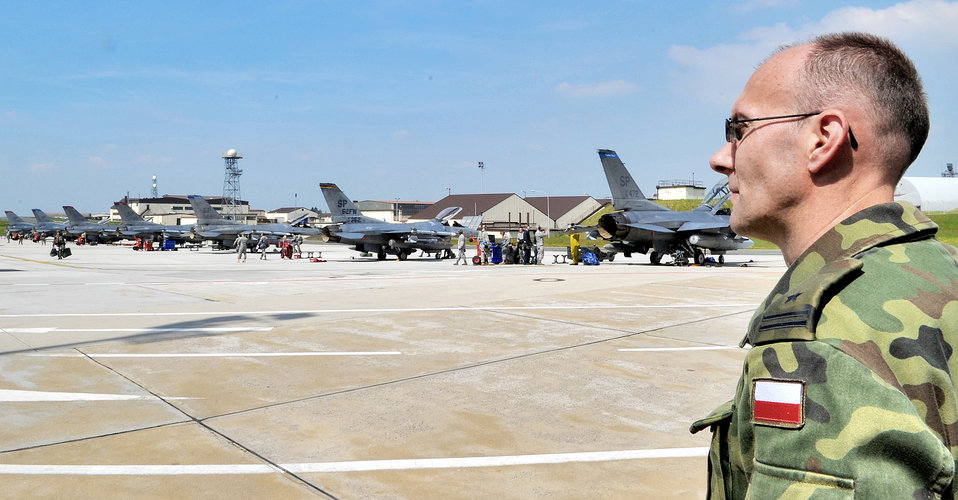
Polish team observes inspection

Polish air force Maj. Andriej Pokladek observes Airmen from the 52nd Aircraft Maintenance Squadron perform maintenance on F-16 Fighting Falcons during a U.S. Air Forces in Europe Operational Readiness Inspection June 23, 2010 at Spangdahlem Air Base, Germany. Members from headquarters USAFE and Aviano Air Base, Italy, 31st Fighter Wing escorted their Polish counterparts during the USAFE ORI. The Polish air force's 32nd Tactical Air Base, Poland, will have its first practice NATO tactical evaluation in August. Major Pokladek is assigned to the Polish Air Force's 32nd ATB.